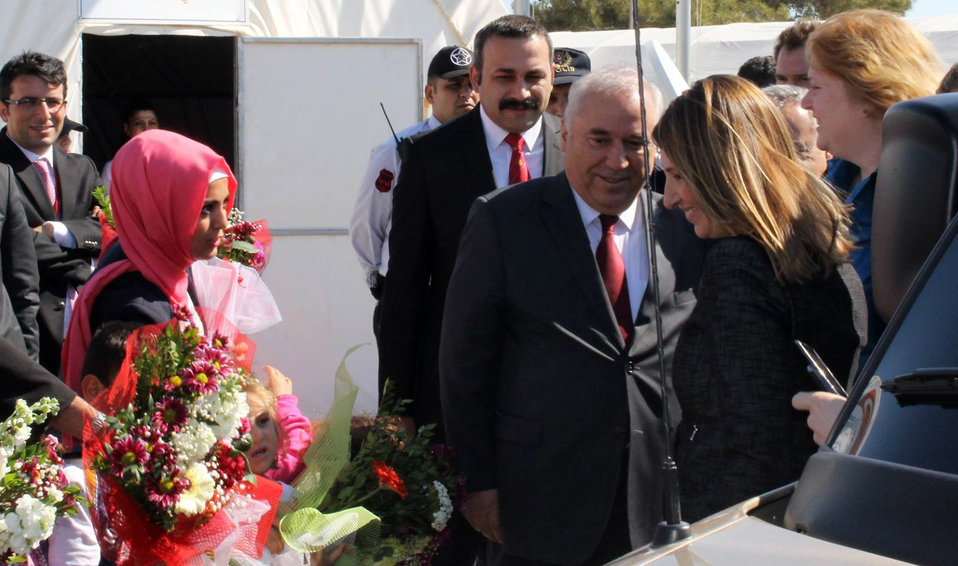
Deputy Secretary Higginbottom and Assistant Secretary Richard Arrive at a Syrian Refugee Camp

Deputy Secretary of State for Management and Resources Heather Higginbottom and Assistant Secretary of State for Population, Refugees, and Migration Anne Richard are welcomed upon arrival at the Syrian Refugee Camp outside of Adana, Turkey, on March 21, 2014.